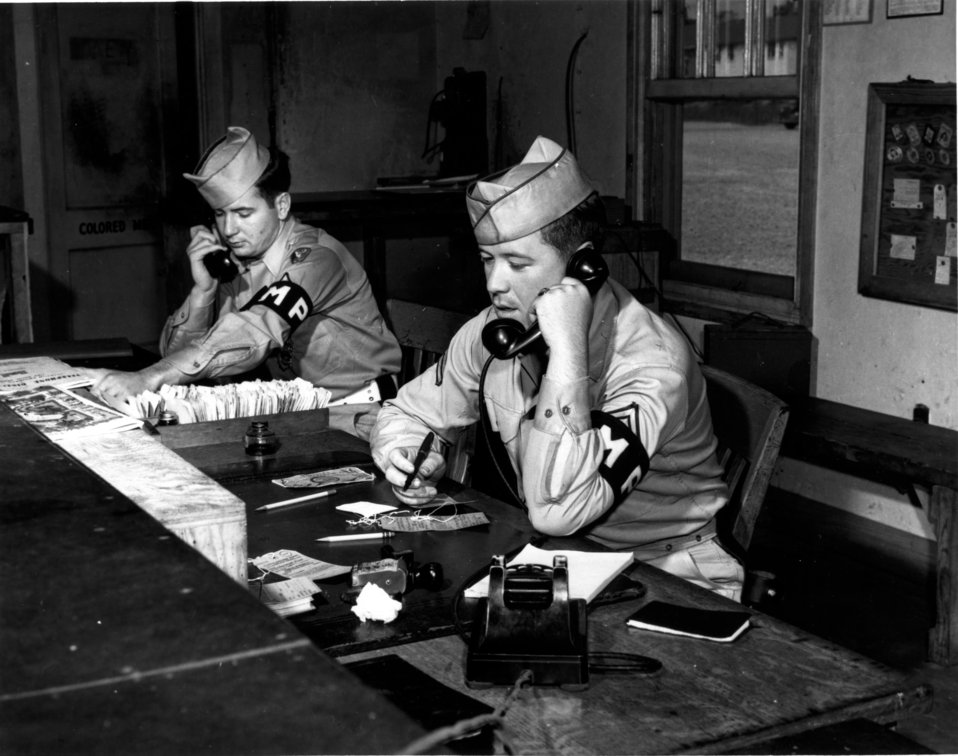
Security at Oak Ridge